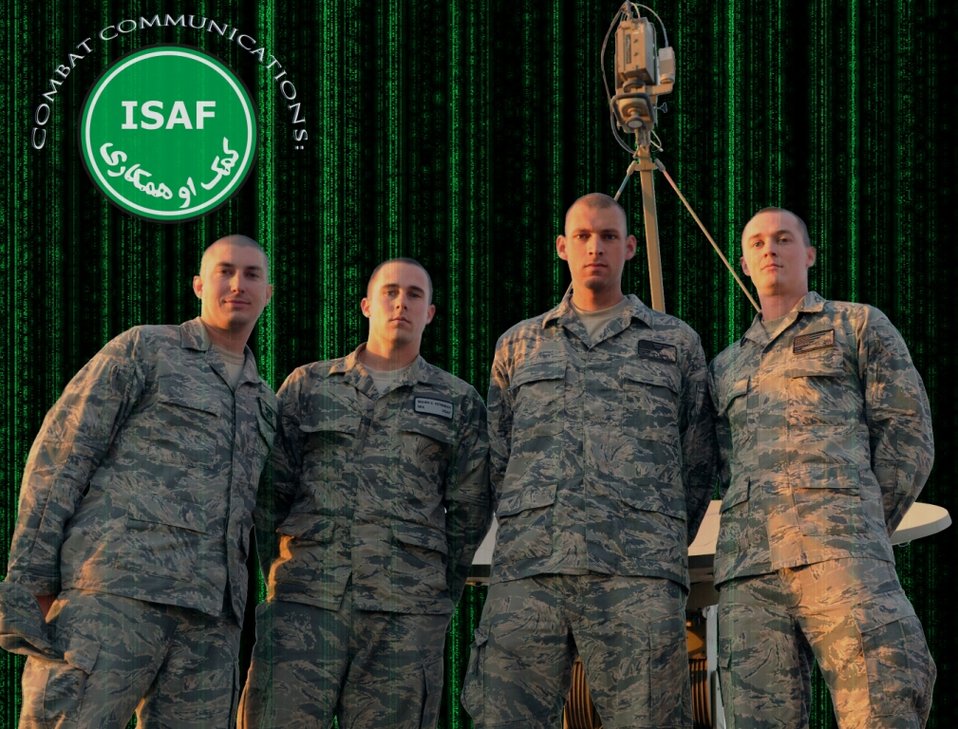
RC-West

Staff Sgt. Matthew Hass, Senior Airman Shawn Peterman, Staff Sgt. Joseph Perry and Airman 1st Class Neil Langgaard pose near a satellite Dec. 13, 2010, at Camp Arena, Afghanistan. The Airmen are part of a team of five communications Airmen responsible for all communication operations at U.S. Forces-Afghanistan Detachment-West. The